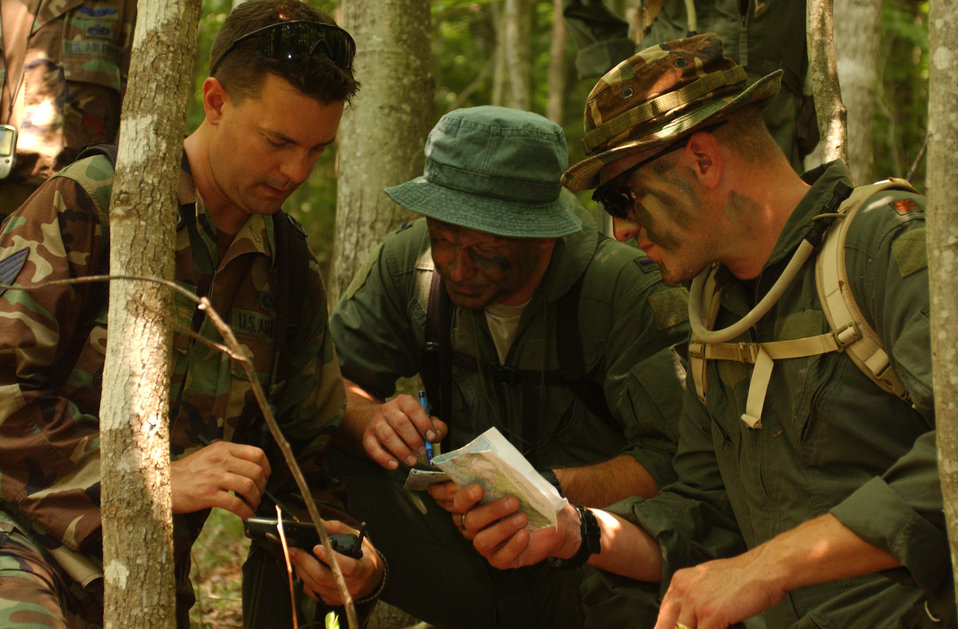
We're on the right trail

Staff Sgt. Eric Condon (left to right), 1st Lt. Robert Sloan and Maj. Jack Richmond practice land navigation Aug. 5 while training at Summersville Lake in Fayetteville, W. Va. The Airmen are with the West Virginia Air National Guard's 130th Airlift Wing.